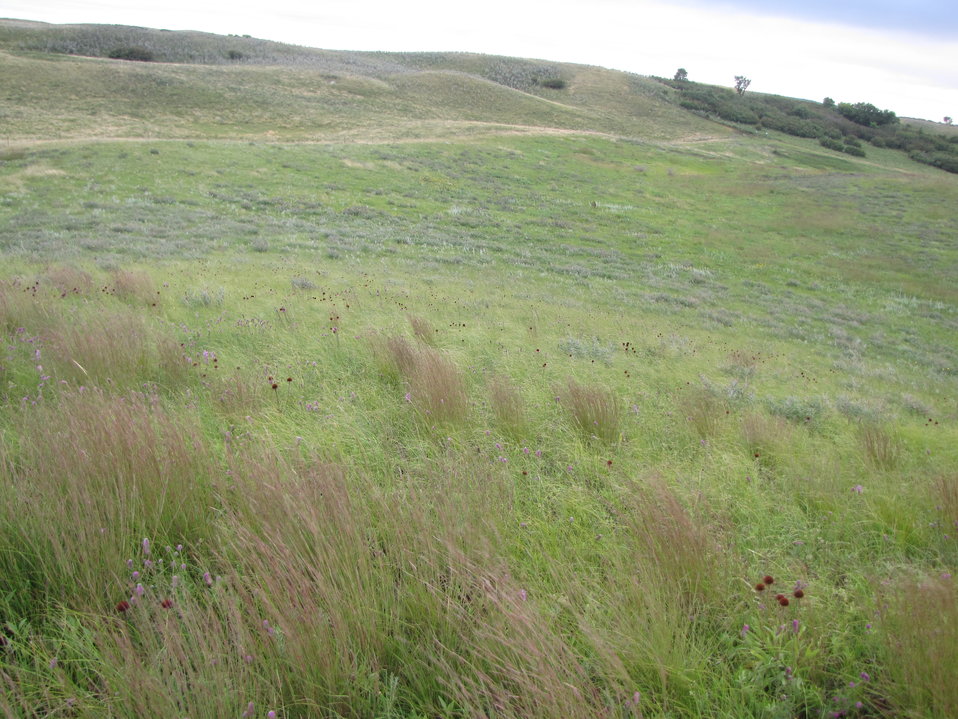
Landscape Sullys Hill National Game Preserve Fort Totten, North Dakota

Sullys Hill National Game Preserve in Fort Totten, ND. Managed by the USFWS, Sullys Hill provides habitat for myriad wetland-dependent birds.